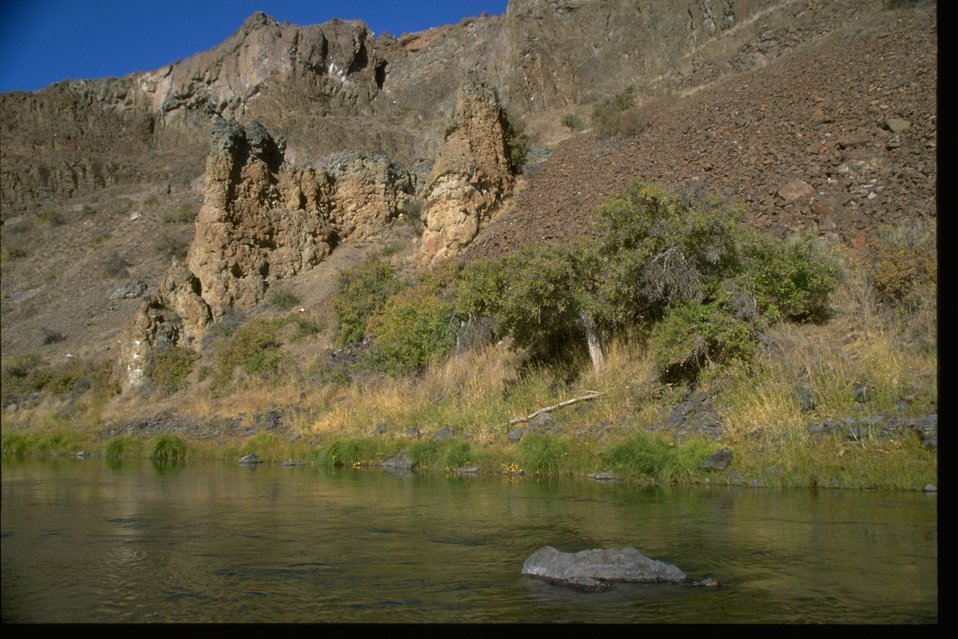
A rock formation and riparian vegetation along the John Day River.